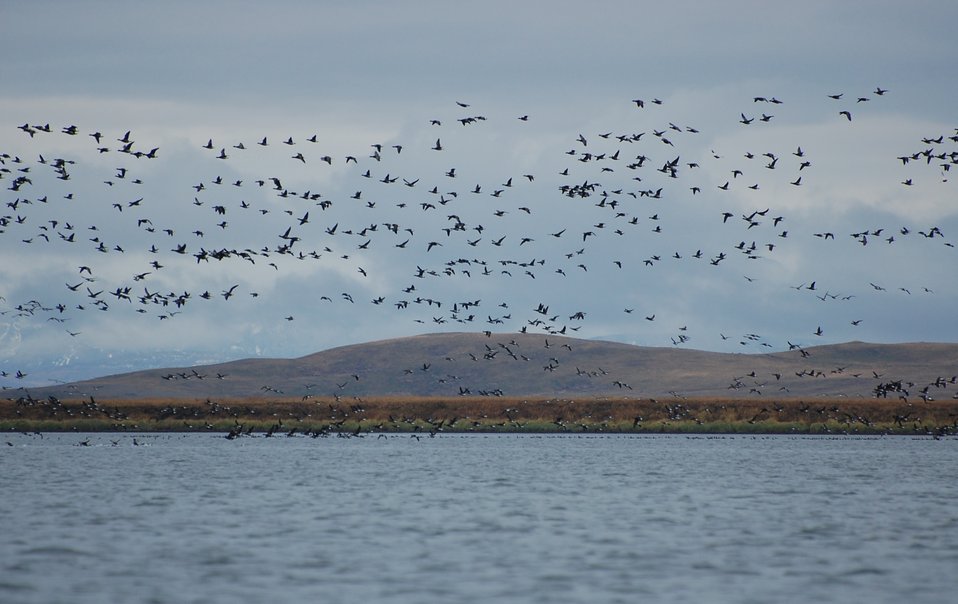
Brant, Izembek Lagoon, Izembek National Wildlife Refuge
Photo by Kristine Sowl, USFWS, Public domain